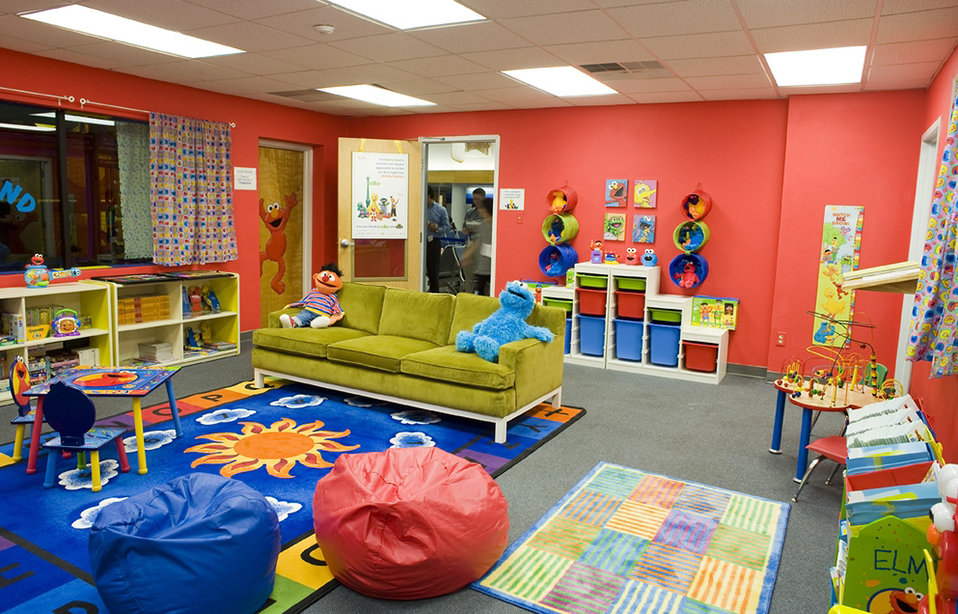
Sesame Workshop

Sesame Rooms provide a much needed child-friendly place for military children to play. Sesame Street officials are sending a